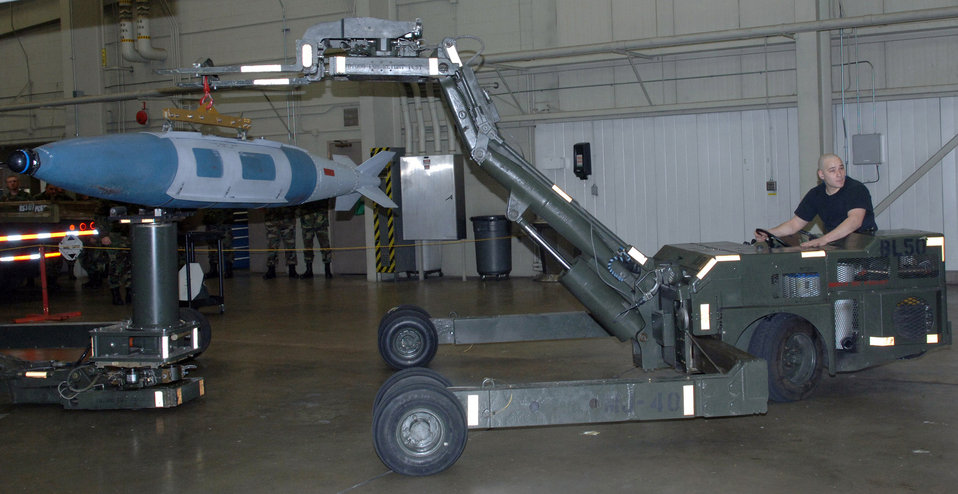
Weapons Load Crew Competition

Senior Airman Andrew Littleton loads weapons during a crew competition at Ellsworth Air Force Base, S.D., on Friday, April 7, 2006. Each crew is rated on their time and efficiency when loading bombs onto the armament systems trainer. Airman Littleton is an aircraft armament systems specialist with the 34th Aircraft Maintenance Unit.